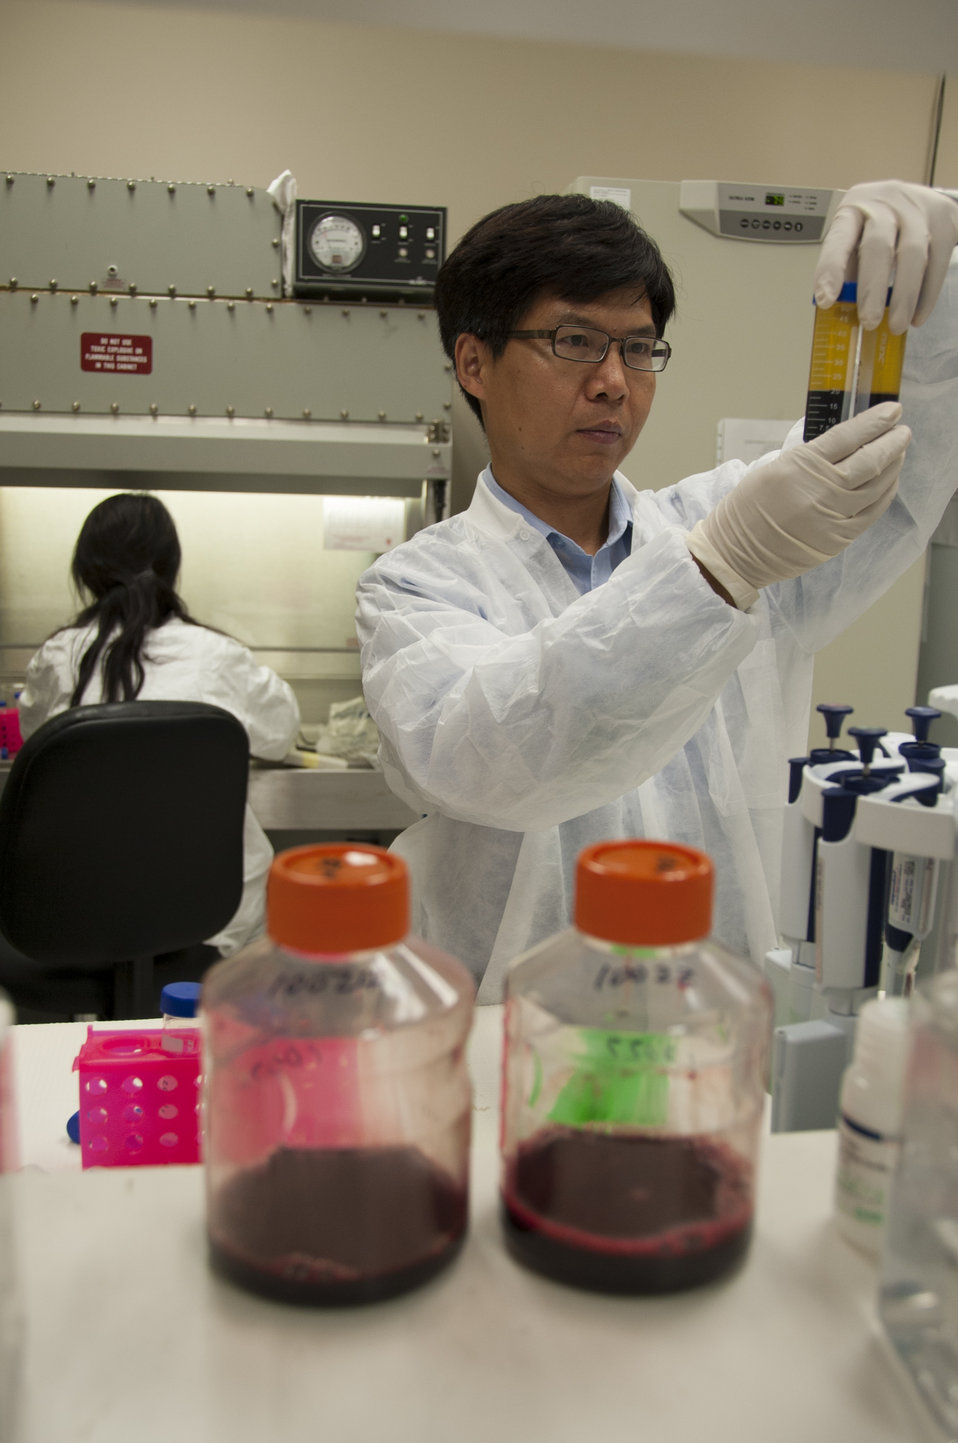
Blood Research: Saving Lives (8482)

Jason Liu, Ph.D., a laboratory chief at FDA’s Office of Blood Research and Review, performs a visual examination of centrifuged whole blood, which was separated into plasma, white blood cells and red blood cells. Meihong Liu, Ph.D., works in the background. FDA is responsible for the safety of our nation’s blood supply and is at the forefront of evaluating and encouraging innovative technologies for protecting it.

Read this Consumer Update to learn more: Advances in Saving Lives with Blood